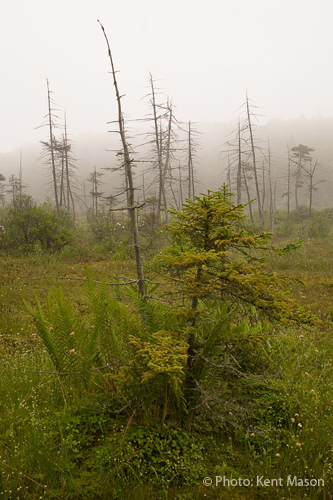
Misty Snags